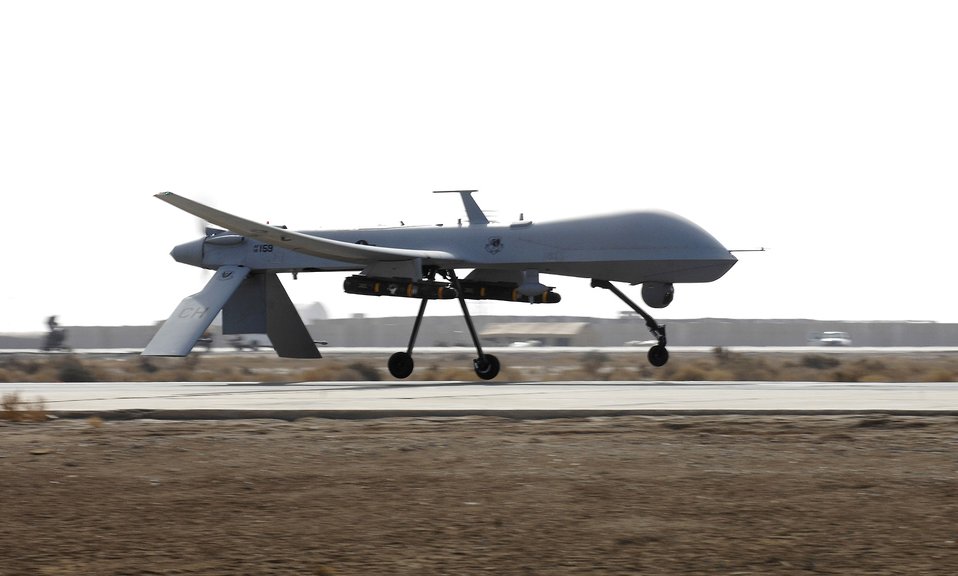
Predator on the move

An MQ-1 Predator unmanned aerial vehicle from the 361st Expeditionary Reconnaissance Squadron takes off for a mission over Iraq Dec. 18 at Ali Base, Iraq. The Predator is a medium-altitude, long-endurance, remotely piloted aircraft capable of conducting armed reconnaissance against critical, perishable targets.